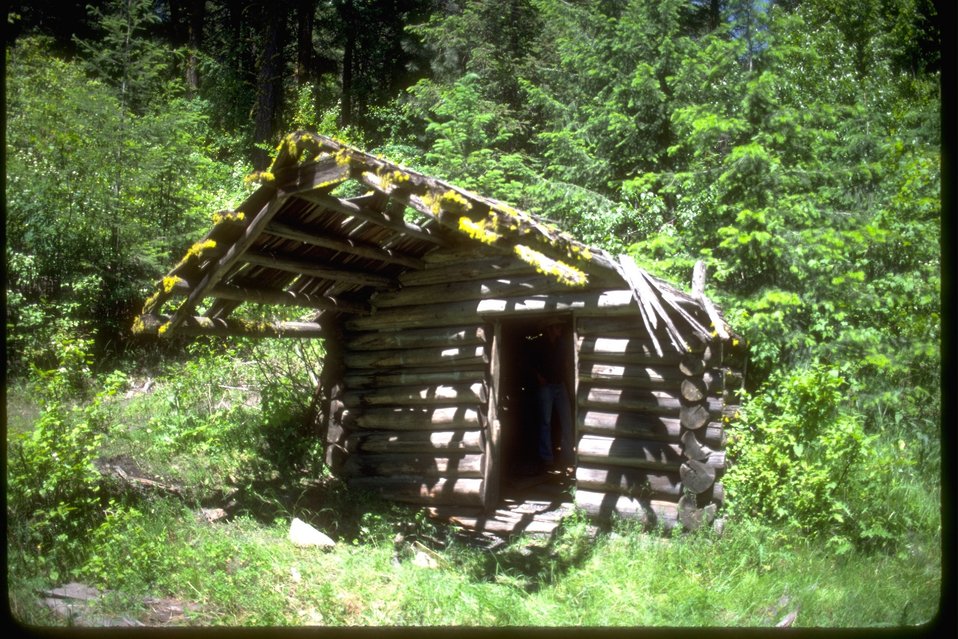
Historic miner's cabin in Stevens County, Washington.